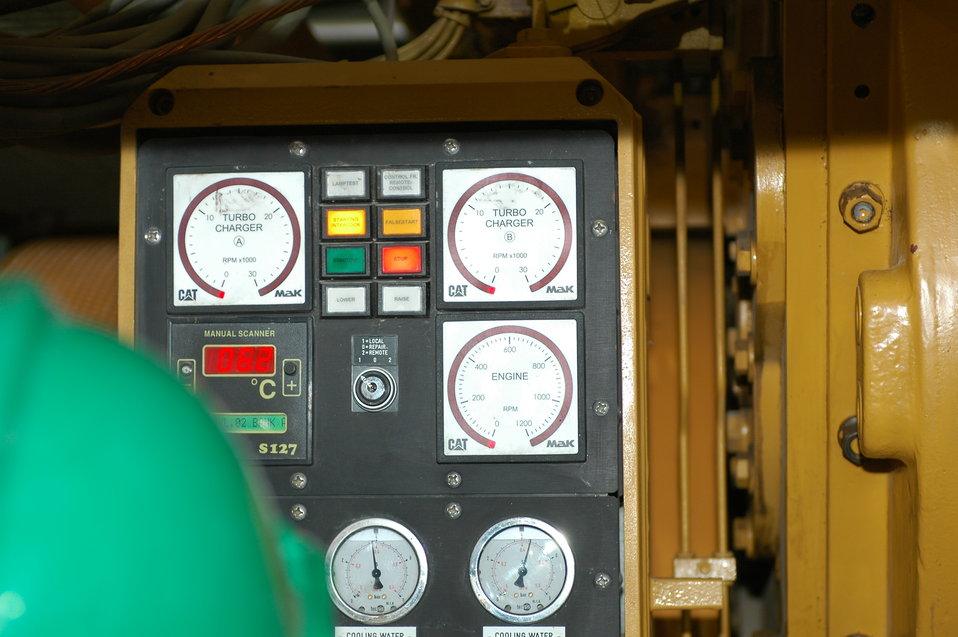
105 MW Tarakhil Power Plant Handover